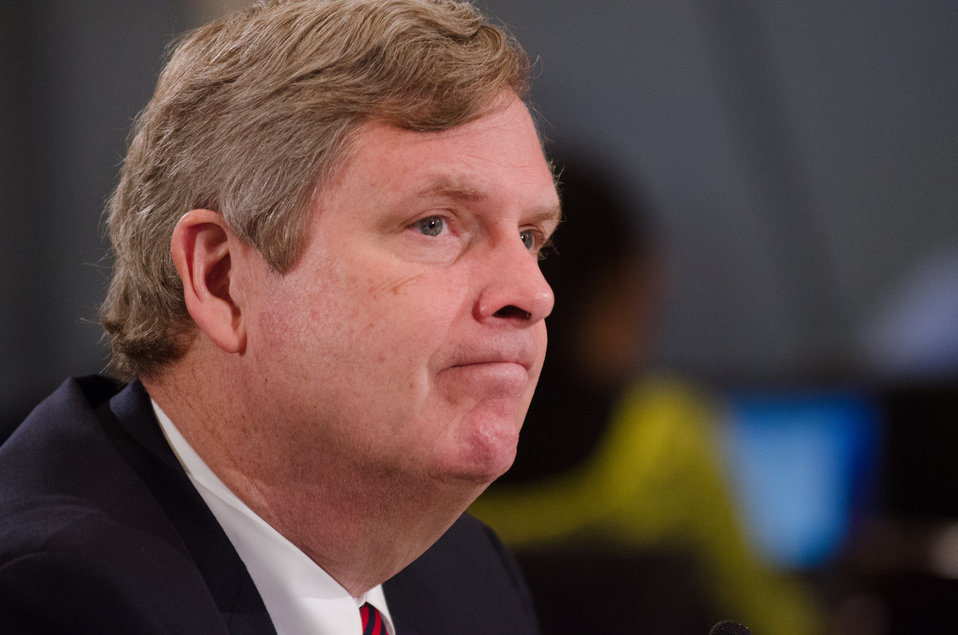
Agriculture Secretary Tom Vilsack testifies before the House Agriculture Committee regarding the “State of the Rural Economy“ at the Longworth House Office Building in Washington, D.C. on Tuesday, Mar. 5, 2013.